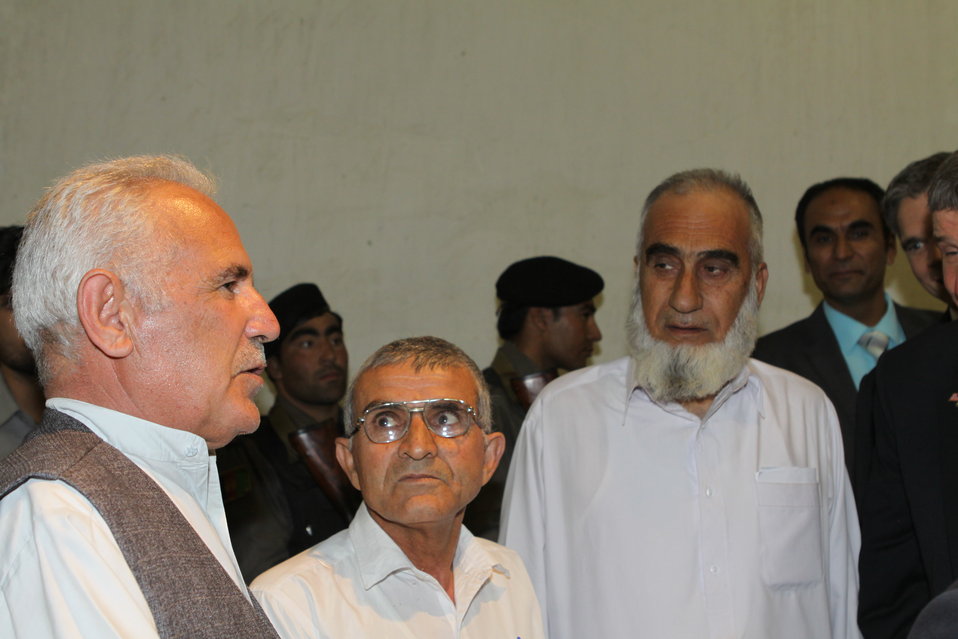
100525 Hirat Textile Company 762